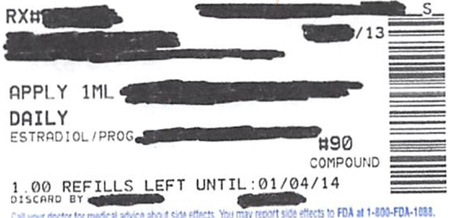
RECALLED – Sterile Injectable

July 31, 2013 – Product Recall – Beacon Hill Pharmacy d/b/a Rxtra Solutions Issues Voluntary Nationwide Recall of Certain Sterile Products Due to a Question of Sterility Assurance.